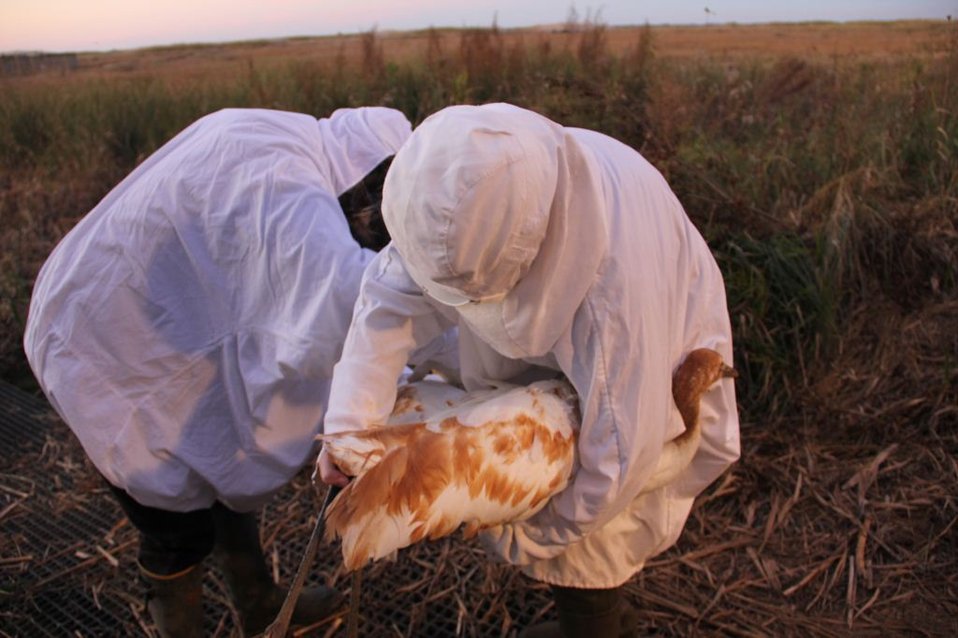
Veterinarian Examines Whooping Crane

Sara Zimorski of the Louisiana Department of Wildlife and Fisheries holding a bird while veterinarian, Dr. Jim LaCour, checks to make sure there were no injuries sustained during the shipment.